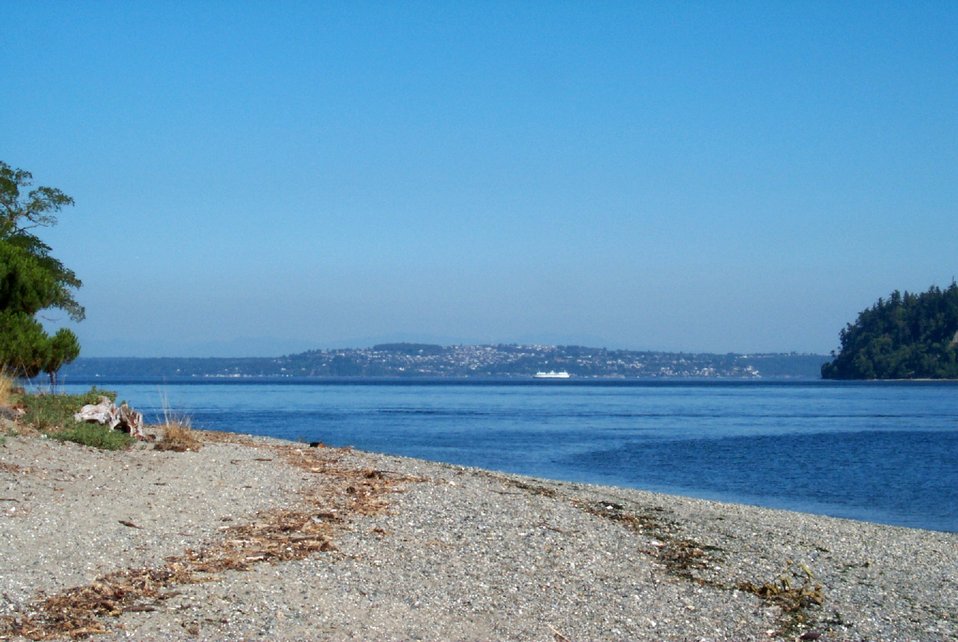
A view of Tacoma and Point Defiance from the spit at Gig Harbor. Debris lines on beach mark the extent of tides in the area. The ferry boat is proceeding from Tacoma to Vashon Island.